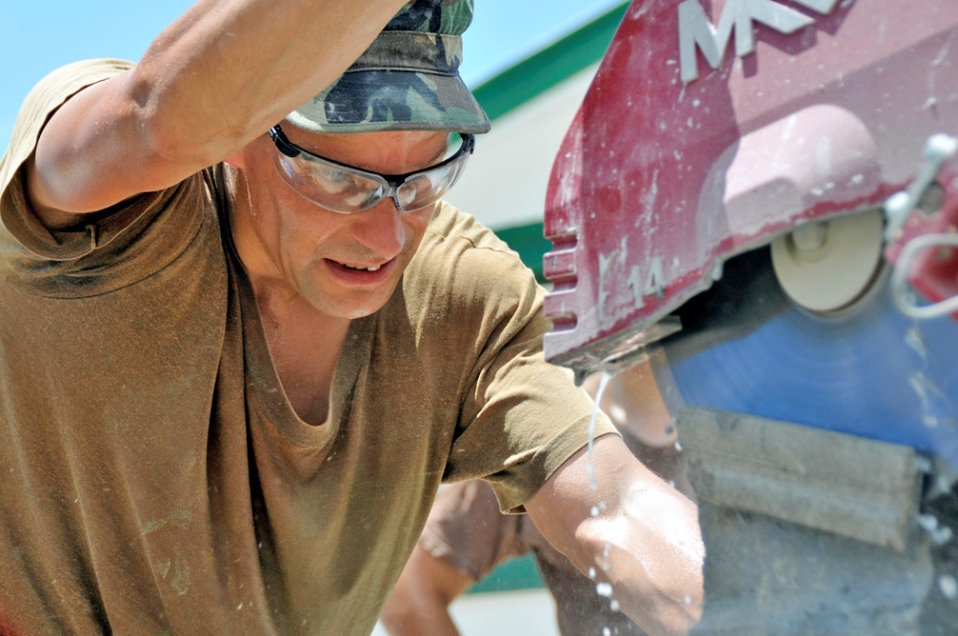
New Horizons Guyana 2009 comes to a close

Tech. Sgt. Kevin Dillon cuts a block during a construction project July 7, 2009, in Georgetown, Guyana as part of New Horizons Guyana. The U.S. Southern Command-sponsored humanitarian event is intended to benefit thousands of Guyanese in Georgetown and its outlying areas. Sergeant Dillon is a structures technician with the 910th Civil Engineering Squadron out of Youngstown Air Reserve Station, Ohio.